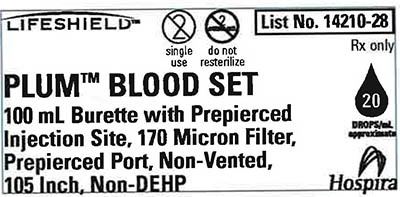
RECALLED – Blood sets used for the administration of blood and blood products

August 13, 2013 – Product Recall – Hospira Issues Important Safety Information for Blood Sets.